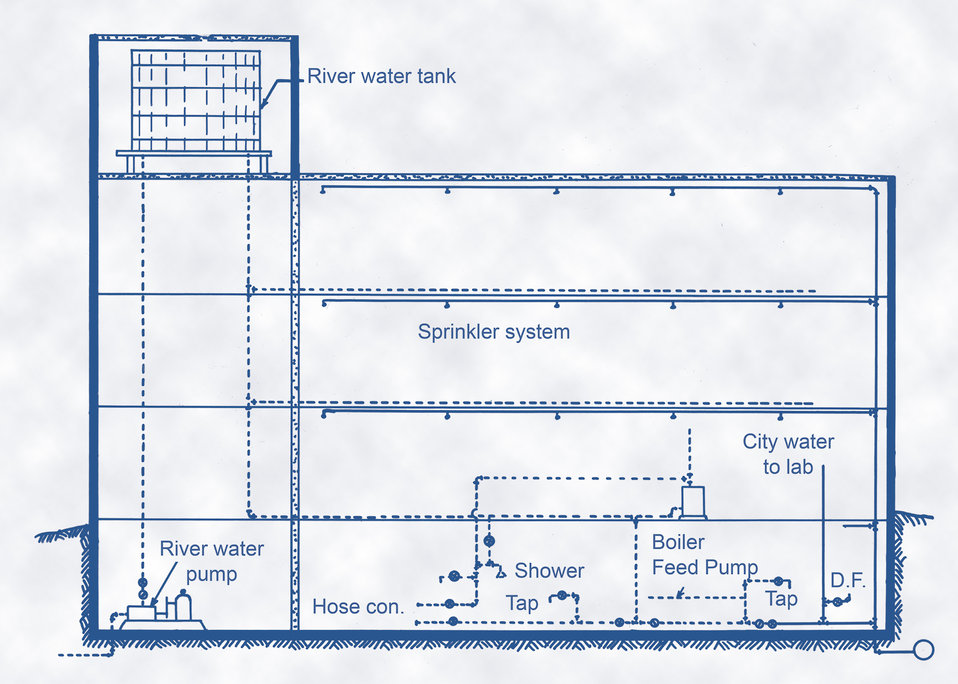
This historic 1936 diagram, which had been digitally enhanced and colorized, illustrated in cross-section, the plumbing interconnections between a municipal water circuit, and adjacent raw water supplies in the water pipes of an industrial plant.